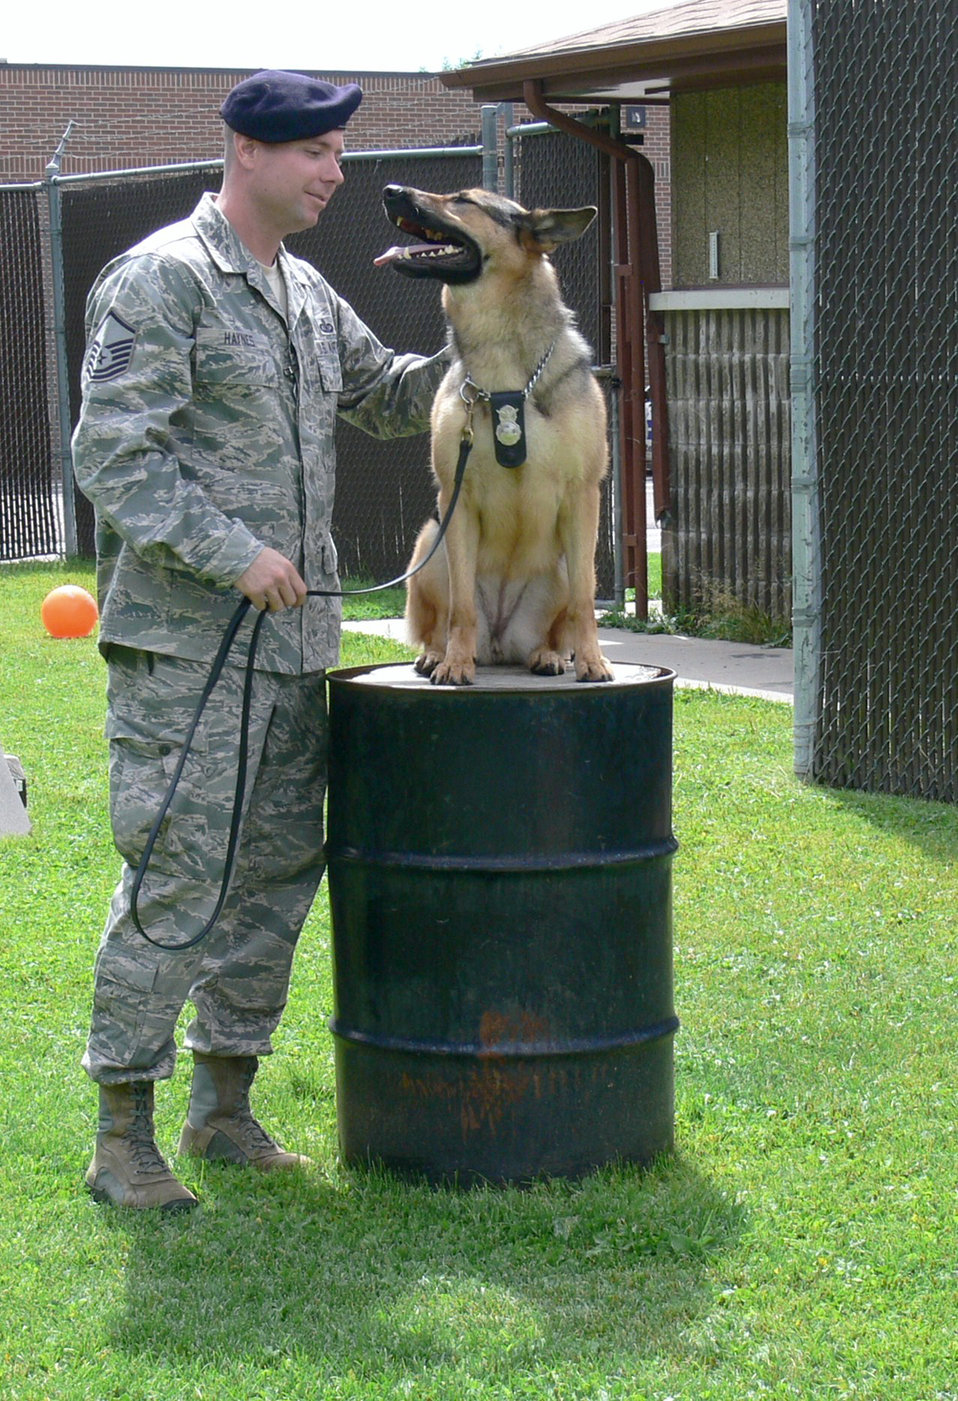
MWD recovers from PTSD

Master Sgt. Eric Haynes praises Gina, a four-year-old German shepherd, during her off-duty play time July 21, 2010, at the Peterson Air Force Base dog kennel in Colo. Sergeant Haynes spent the past six months working daily with Gina, who suffered from post traumatic stress disorder after her tour in the Southwest Asia. Sergeant Haynes is the 21st Security Forces Squadron NCO in charge of the military working dog section.